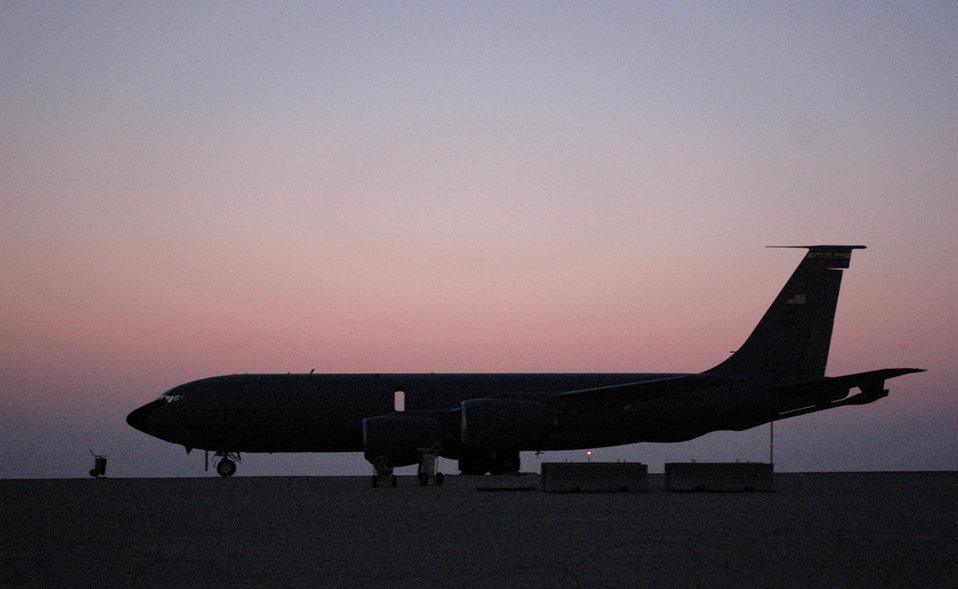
August 29 airpower summary

A KC-135 Stratotanker awaits a mission, crew and more gas in Southwest Asia. Coalition refuelers supplied 2.5 million pounds of fuel to more than 220 aircraft Aug. 28. The KC-135 is with the 340th Expeditionary Air Refueling Squadron.